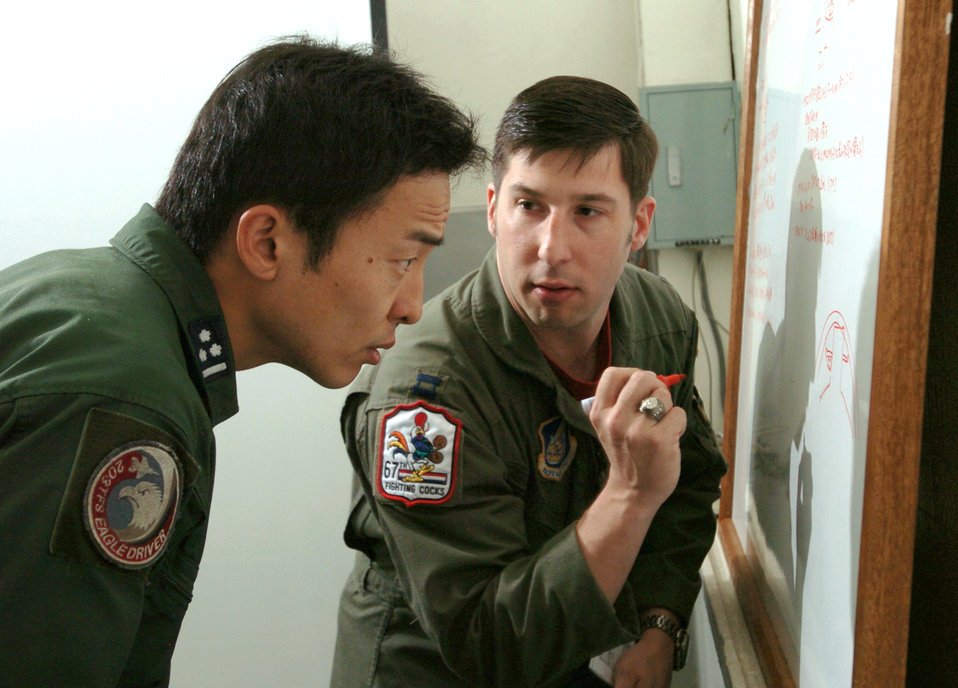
U.S., Japanese Airmen train together during air refueling

NYUTABARU AIR BASE, Japan -- Capt. Tony Dicarlo and Japanese Capt. Masato Miyake discuss flight tactics before hands-on air-to-air refueling training here. Japanese F-15 Eagle pilots, under the watchful eye of U.S. Airmen, are getting trained to qualify in aerial refueling. Captain Dicarlo is an F-15 pilot with the 67th Fighter Squadron at Kadena Air Base, Japan.